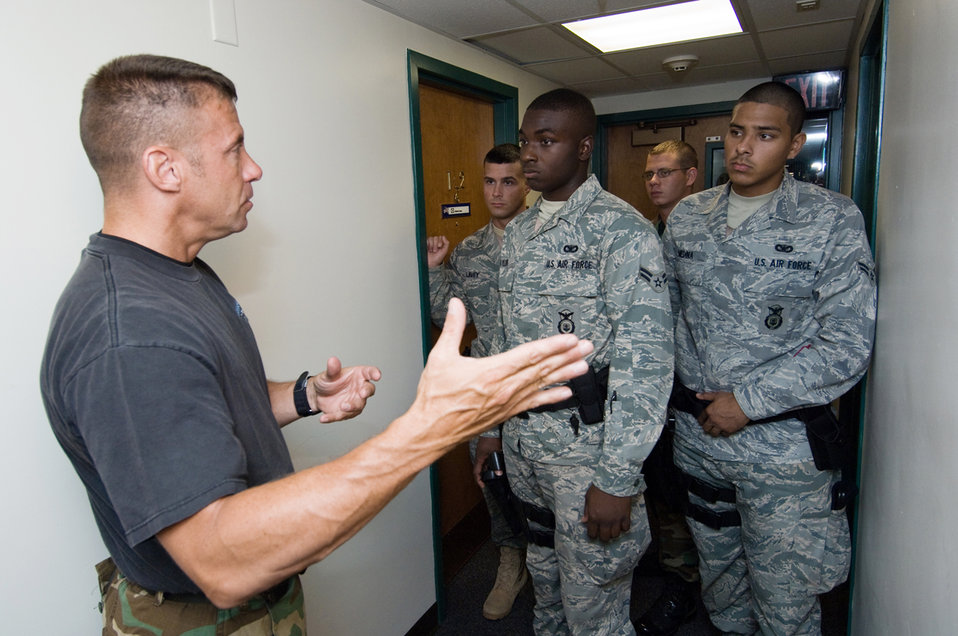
Hanscom Airmen train with Massachusetts state troopers

Jim O'Donnell (from left to right) gives Airman 1st Class Jeffrey Lavey, Airman 1st Class Nicholas Taylor, Staff Sgt. Christopher Darrow and Airman 1st Class Abraham Medina instruction on neutralizing an active shooter within the dormitories during training Aug. 6 at Hanscom Air Force Base, Mass. Trooper O'Donnell is a member of the Massachusetts State Police Special Tactical Operations Team. The Airmen are assigned to the 66th Security Forces Squadron.